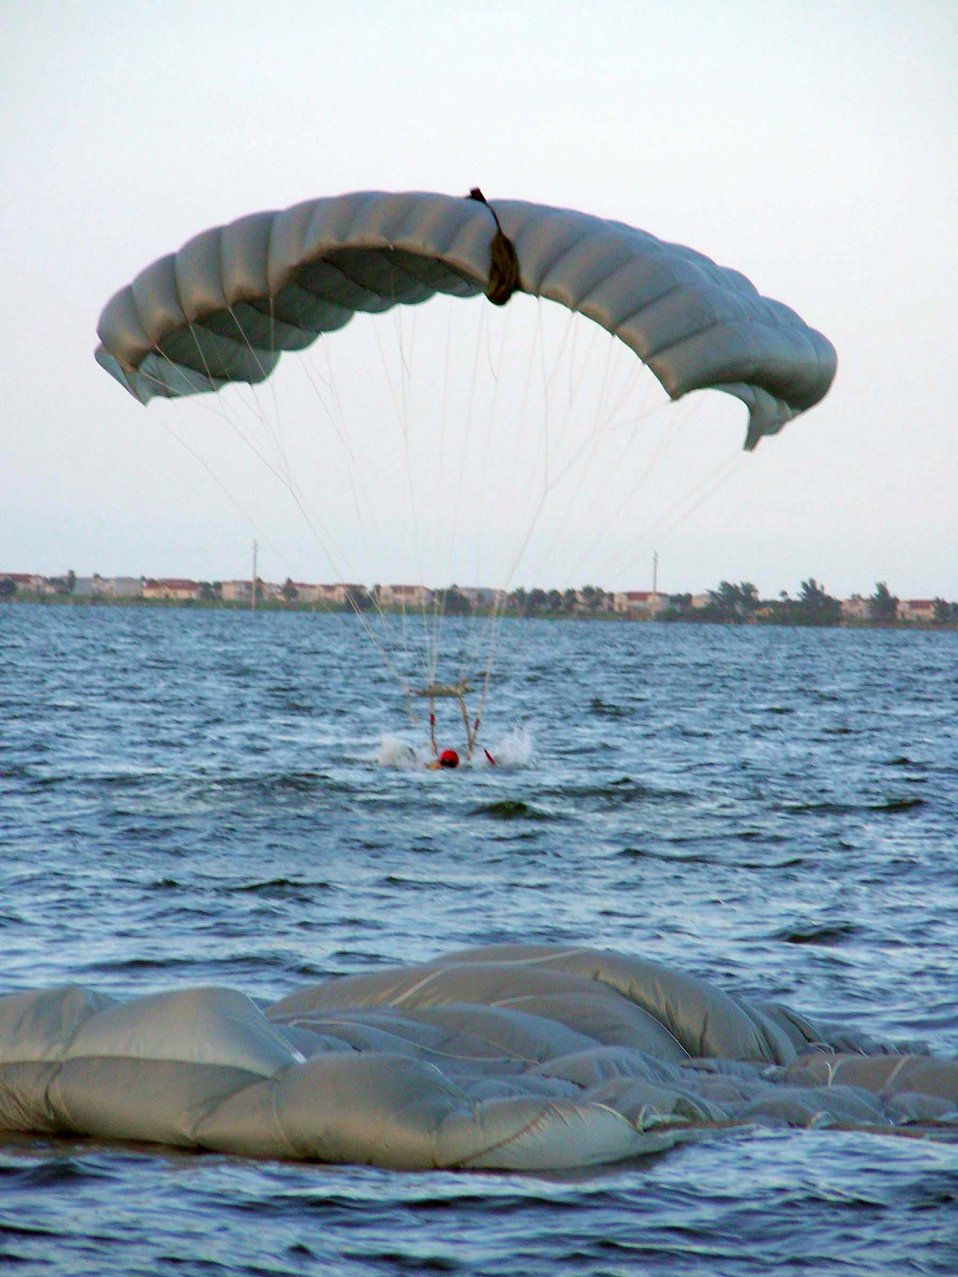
Pararescuemen train for space shuttle launch recovery

A pararescueman from the 920th Rescue Wing lands in the Banana River near Patrick Air Force Base, Fla., on Friday, June 23. He and other PJs were participating in open water rescue and recovery training to prepare them for space shuttle launch recovery support.